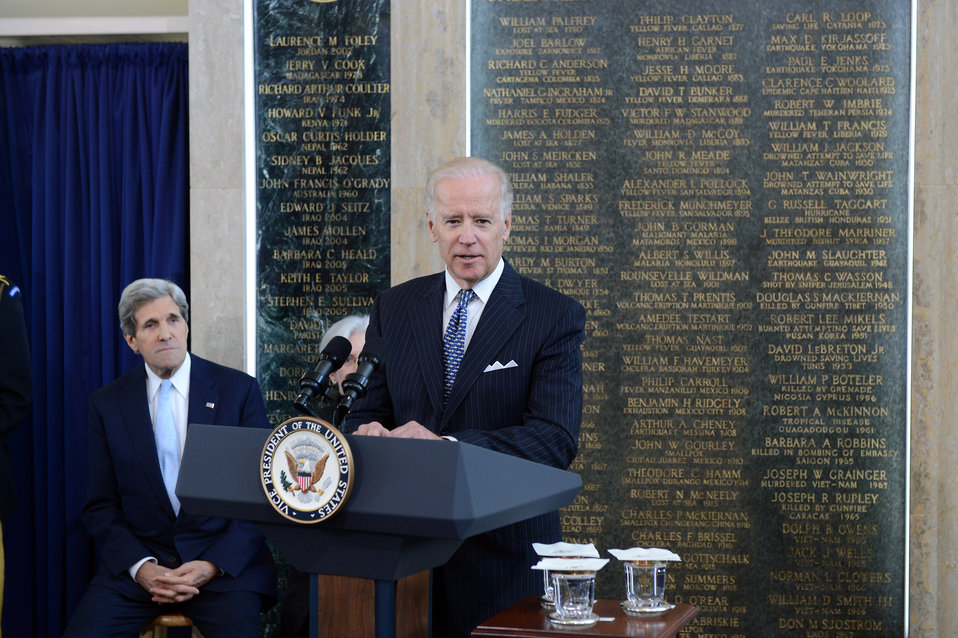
Vice President Biden Delivers Remarks at the AFSA Memorial Plaque Ceremony

U.S. Secretary of State John Kerry looks on as U.S. Vice President Joseph Biden delivers remarks at the American Foreign Service Association (AFSA) Memorial Plaque Ceremony, where they honor the dedication of colleagues in the Foreign Service, at the U.S. Department of State in Washington, D.C., on May 3, 2013.